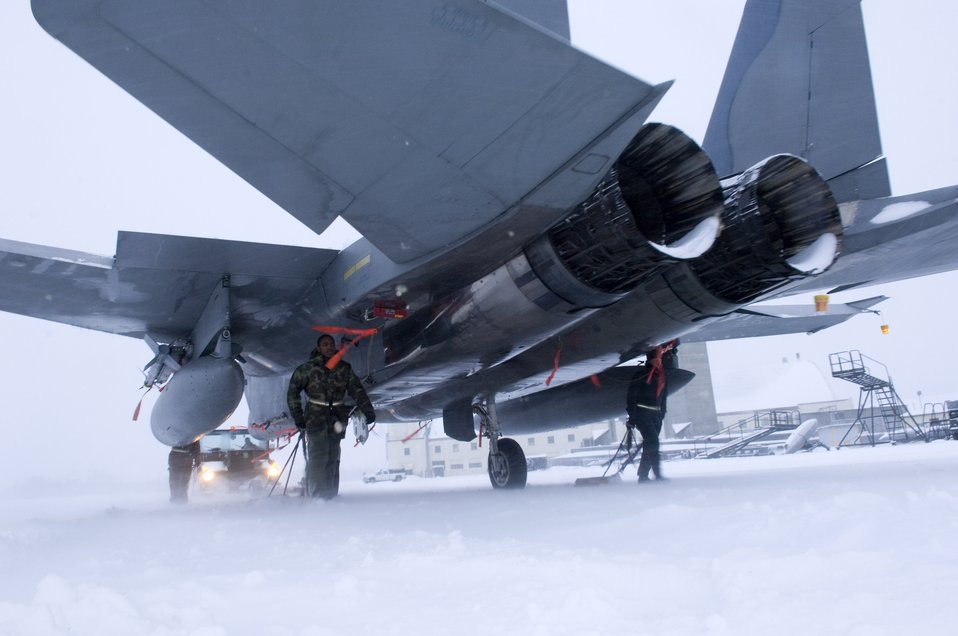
Getting out of the cold

Spotters walk alongside an F-15E Strike Eagle being moved to a hangar Dec. 18 at Elmendorf Air Force Base, Alaska.